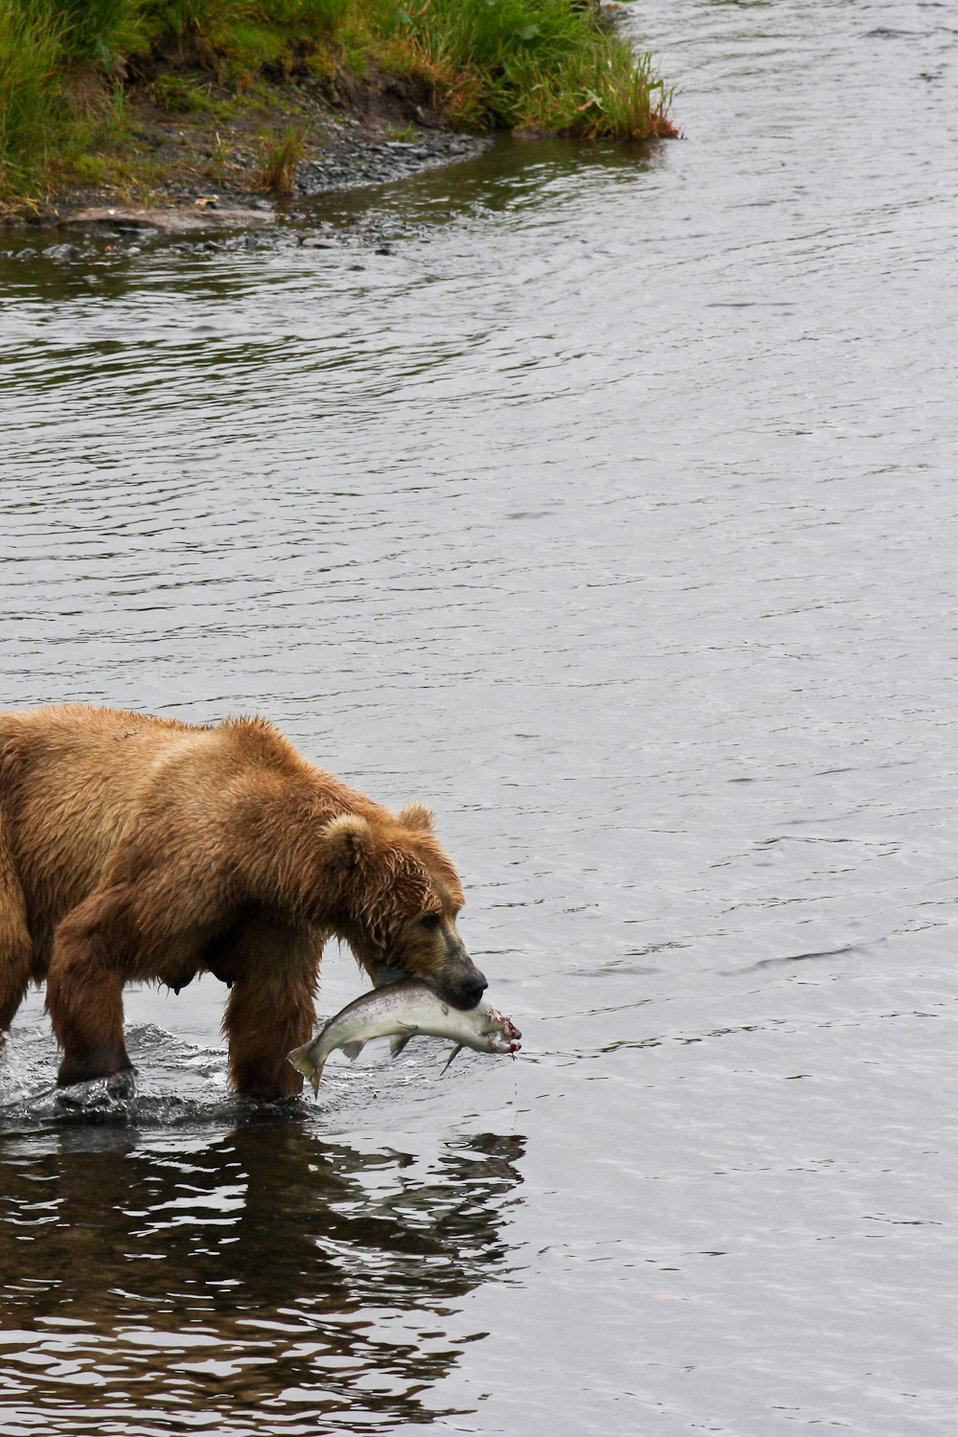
Fresh dinner

Kodiak brown bear with sockeye salmon. Dog Salmon River.
Lisa Hupp/USFWS